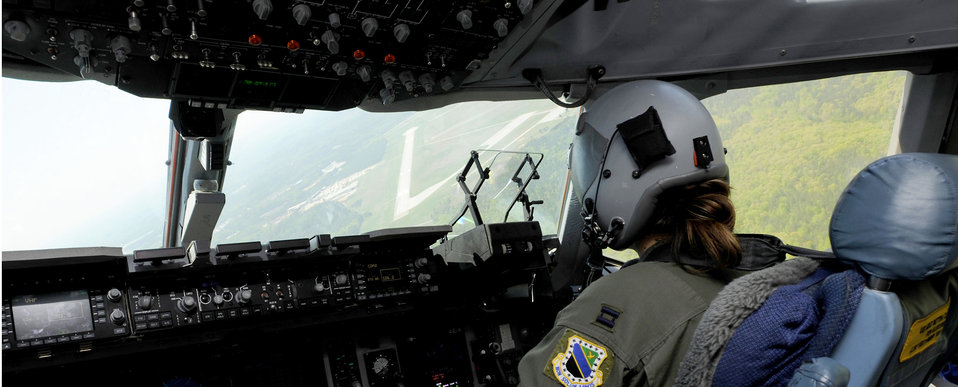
Joint training at 12,500 feet

Capt. Adam Knox (left) and Capt. Jessica Reghi prepare to land a C-17 Globemaster III April 15, 2010, at Fort Pickett Maneuver Training Center, Va. The plane is landing to pick up a group of Navy SEALs during a joint training exercise with 517th Airlift Squadron members from Elmendorf Air Force Base, Alaska, and SEAL Team 10.